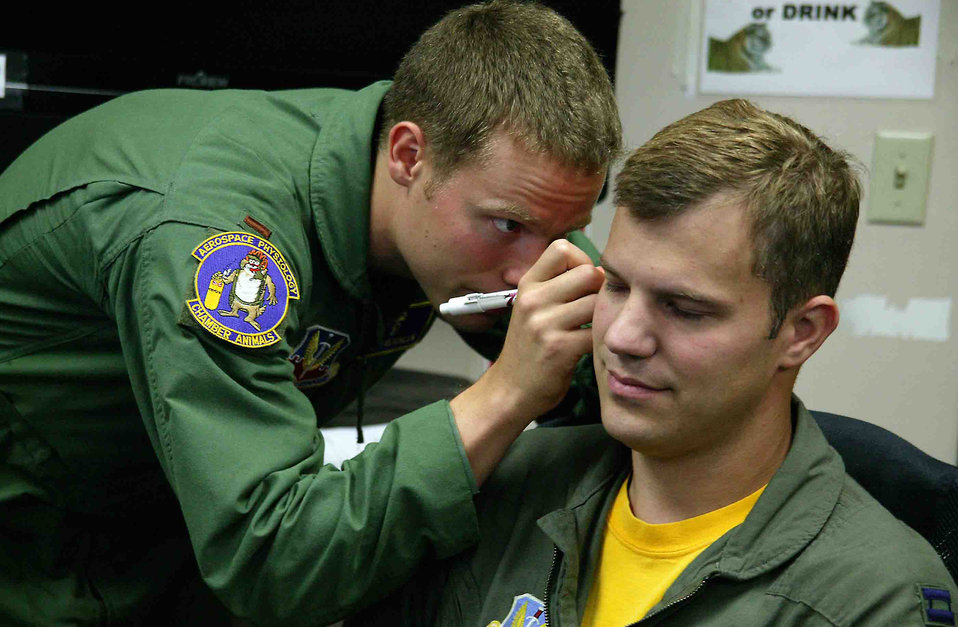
Shaw pilots hear better with new earpiece

2nd Lt. Chris Reichlen (left) inserts a tube into the ear of Capt. Joe Biedenbach to make an inner-ear mold for the Attenuating Custom Communications Earpiece System Sept. 14 at Shaw Air Force Base, S.C. The ACCES device will significantly reduce surrounding ambient noise that pilots hear in the cockpit and increase the efficiency of radio communications. Lieutenant Reichlen is a 20th Aerospace Medicine Squadron aerospace physiologist, and Captain Hand is a 79th Fighter Squadron F-16 Fighting Falcon pilot.